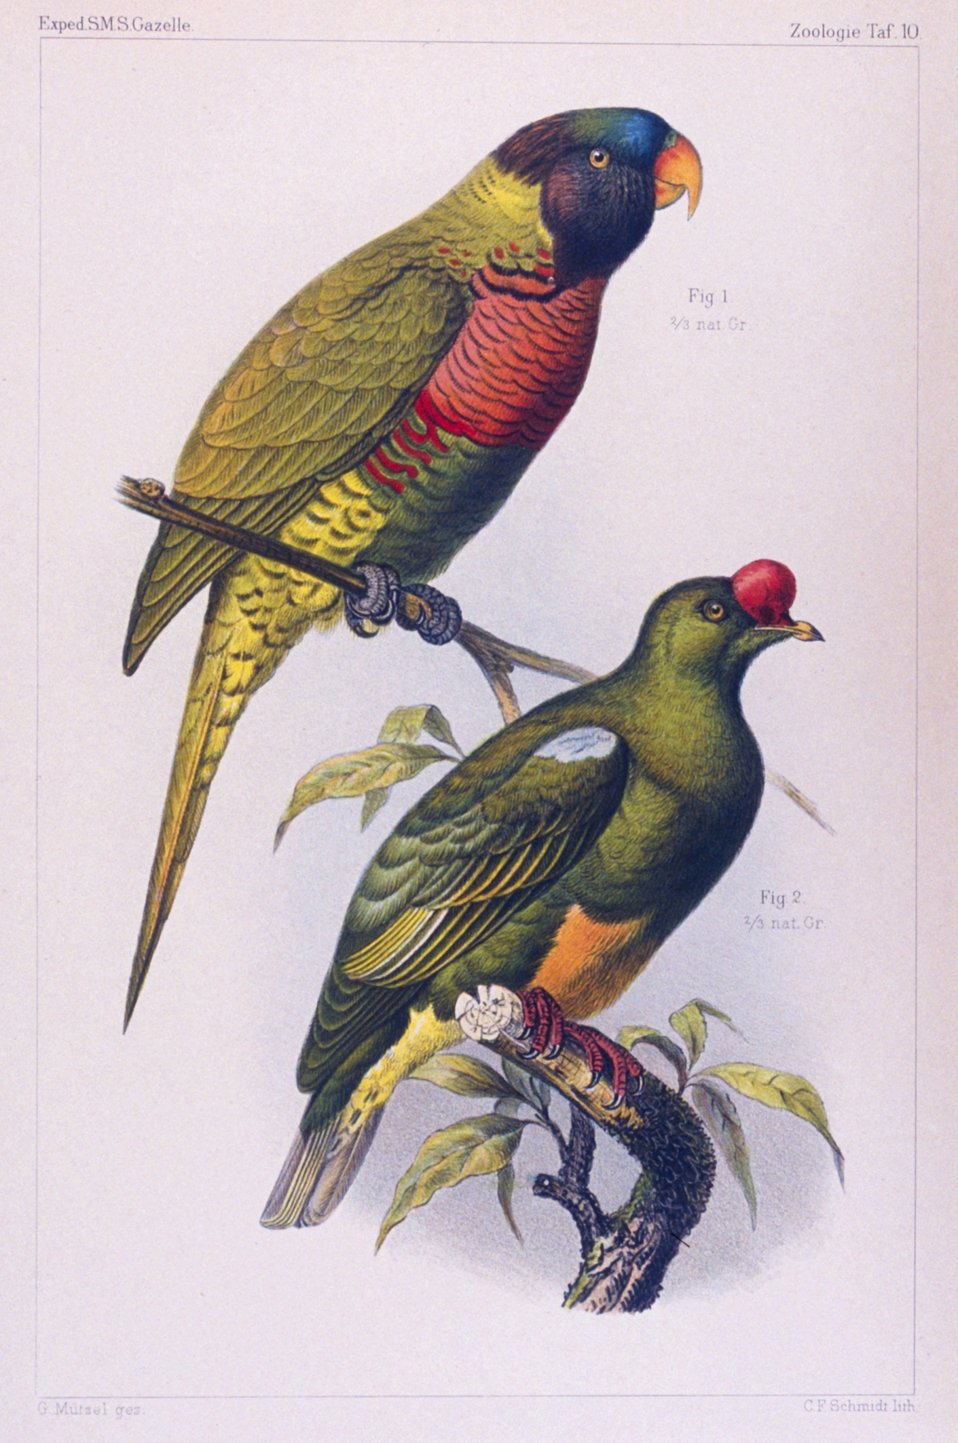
Water color of parrots seen during the voyage of the GAZELLE.